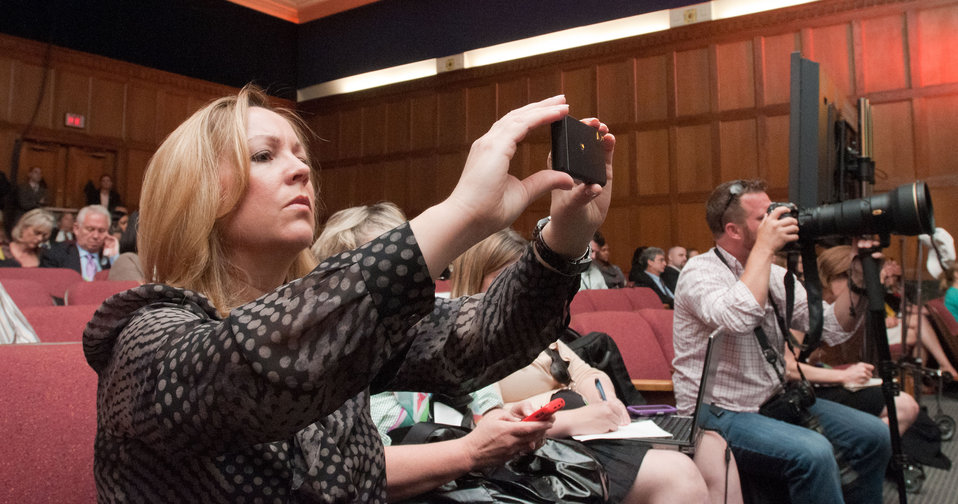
Members of the audience and press document First Lady Michelle Obama's talk about the new food icon MyPlate at the U. S. Department of Agriculture (USDA) in Washington, D.C. on Thursday, June 2, 2011 This new icon will replace the USDA’s MyPyramid image as the government’s primary food group symbol. MyPlate is an easy-to-understand visual cue to help consumers adopt healthy eating habits that are consistent with the 2010 Dietary Guidelines for Americans. MyPyramid will remain available to interested health professionals and nutrition educators in a special section of the new website.